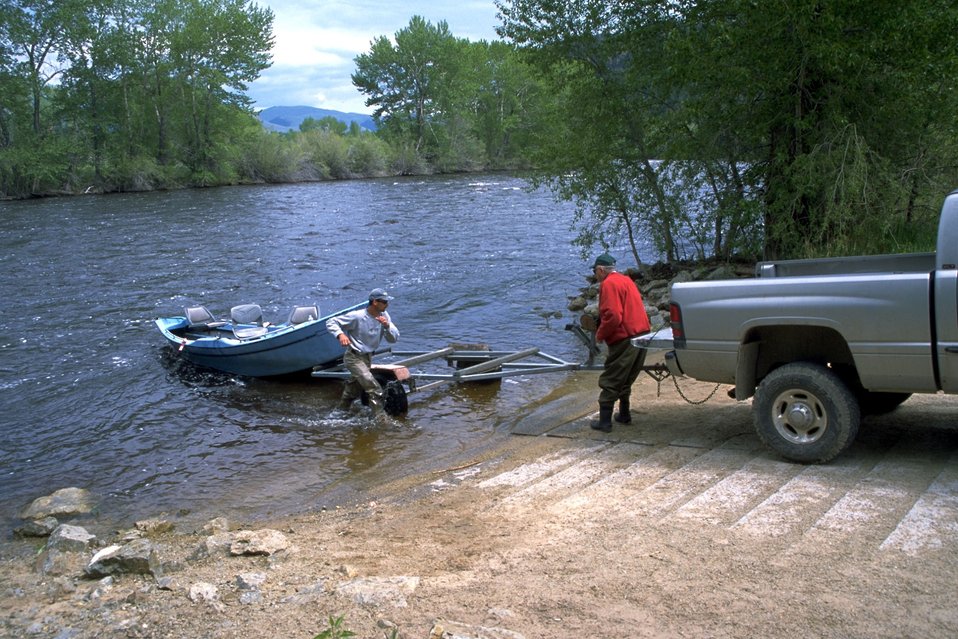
The boat ramp at the Divide Day Use Area